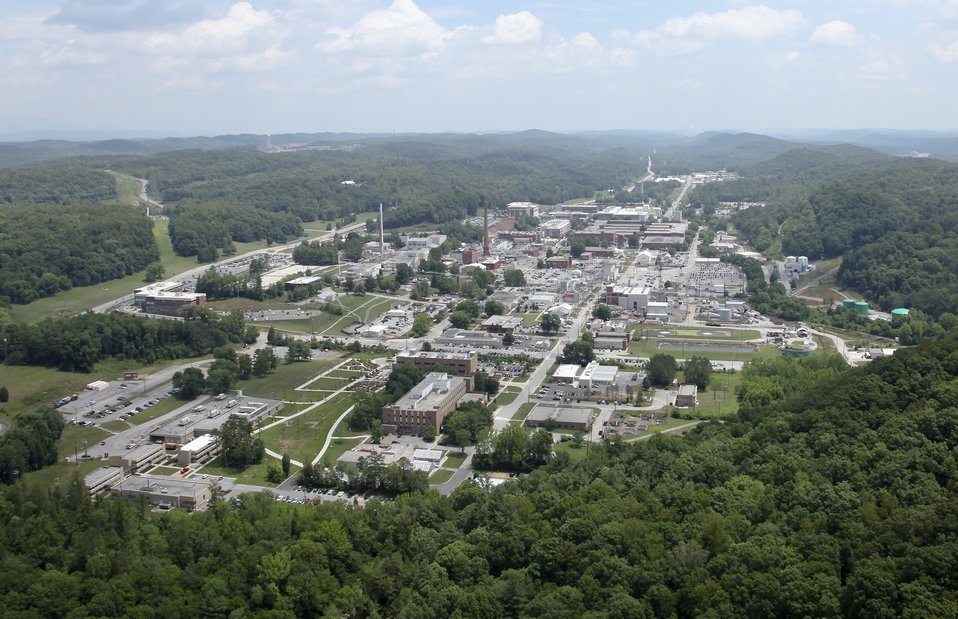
Oak Ridge National Laboratory’s (ORNL) central campus has been a priority for Recovery Act-funded cleanup.